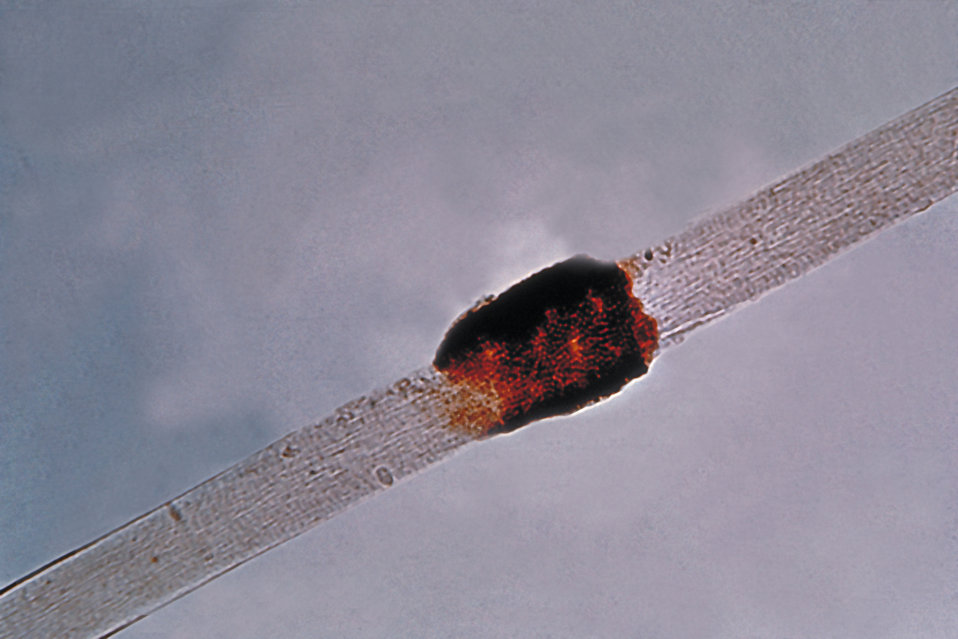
This is a photomicrograph of a hair shaft with a condition called 'black piedra' due to Piedraia hortae.